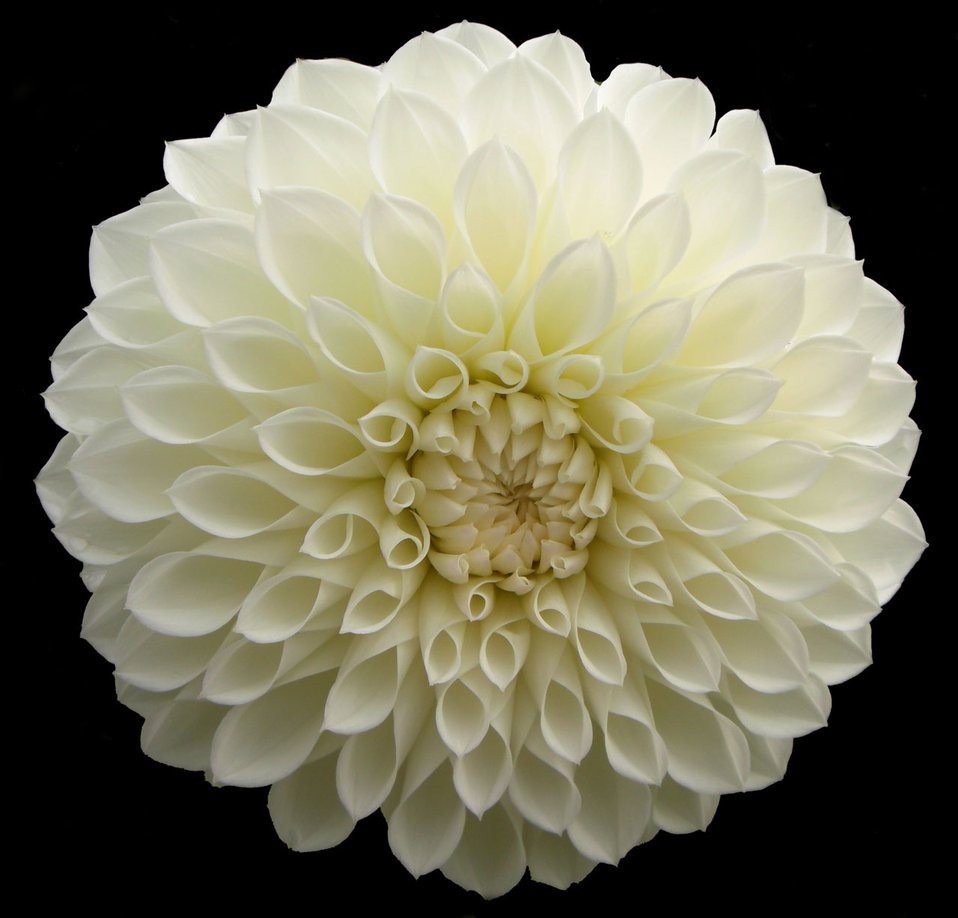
White jomanda on black..